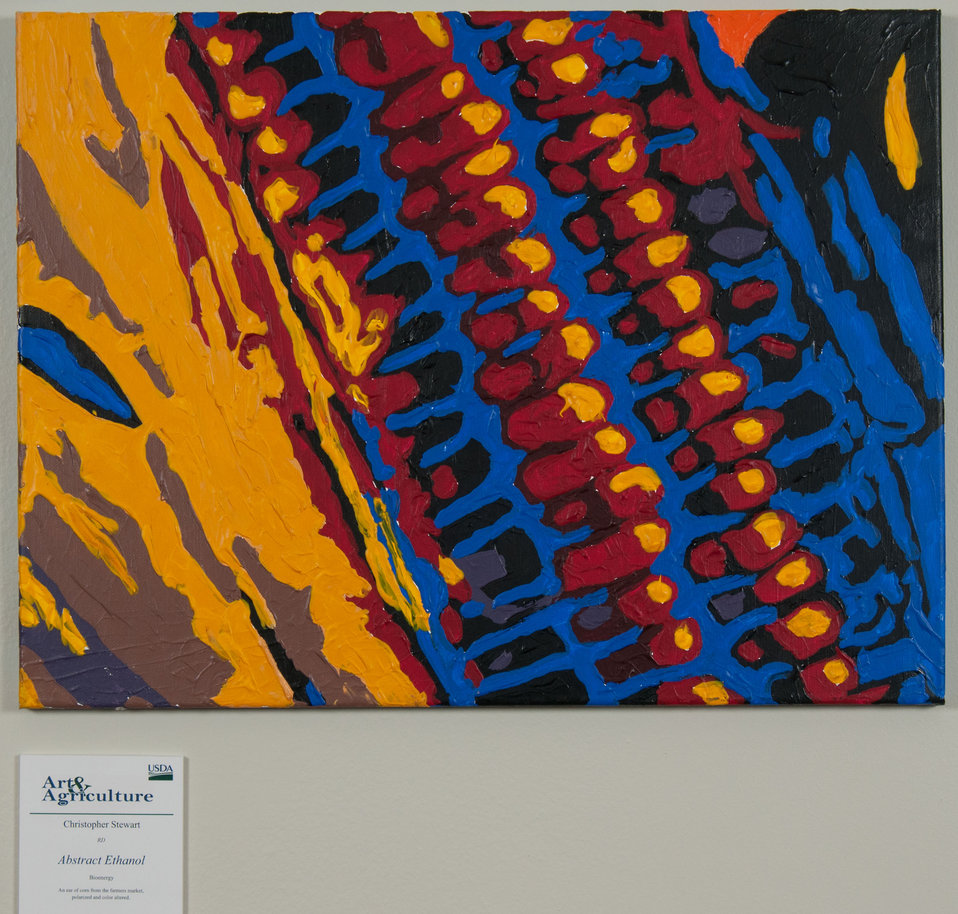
Online Viewer's Choice entries of the 2013 Art & Agriculture, Tuesday, July 9, 2013, in the South Building, Washington, D.C. Themes were expressed by employees from across the department and the contest was open to full-time and part-time USDA employees. Winning artwork will be displayed till the end of the year. U.S. Artistic expression is a creative outlet that is vital for an individual to grow and develop.